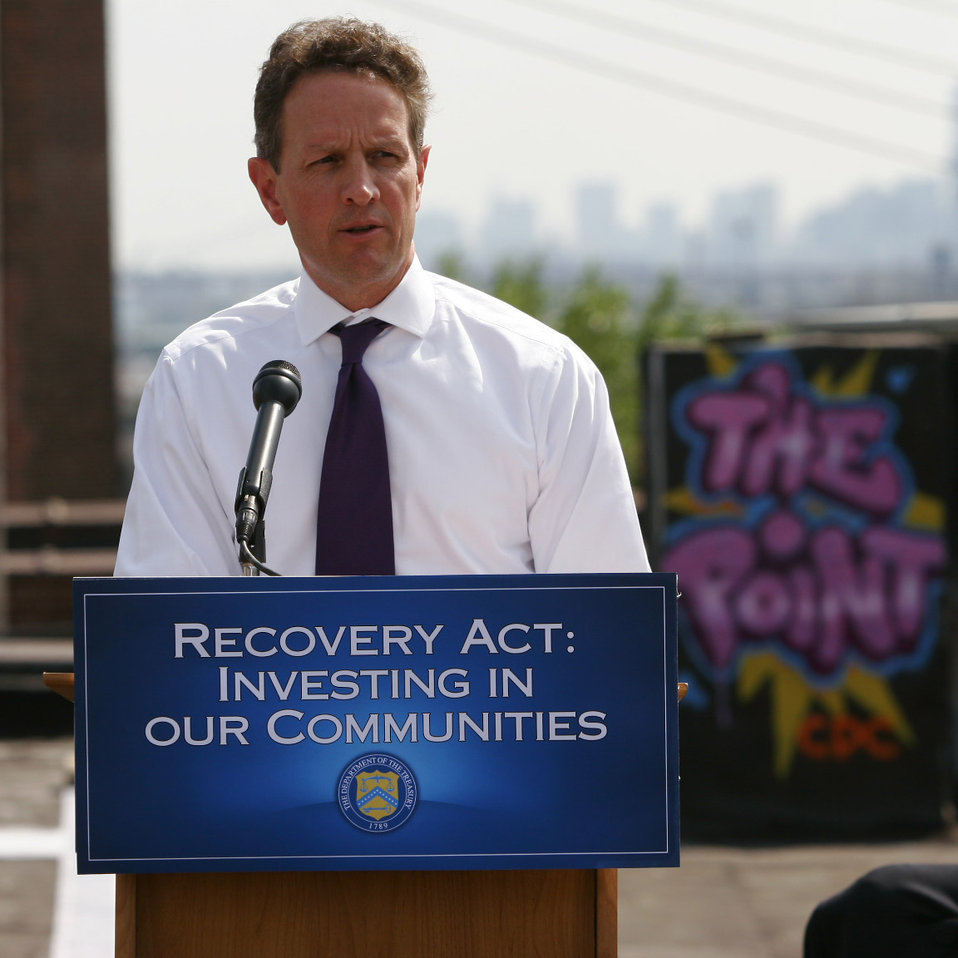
The Point: June 29, 2009

Secretary Geithner speaking at The Point, a CDFI in Bronx, NY, to highlight the local impact of the American Recovery and Reinvestment Act investments and announce $90 million in financial assistance awards for 59 Community Development Financial Institutions.